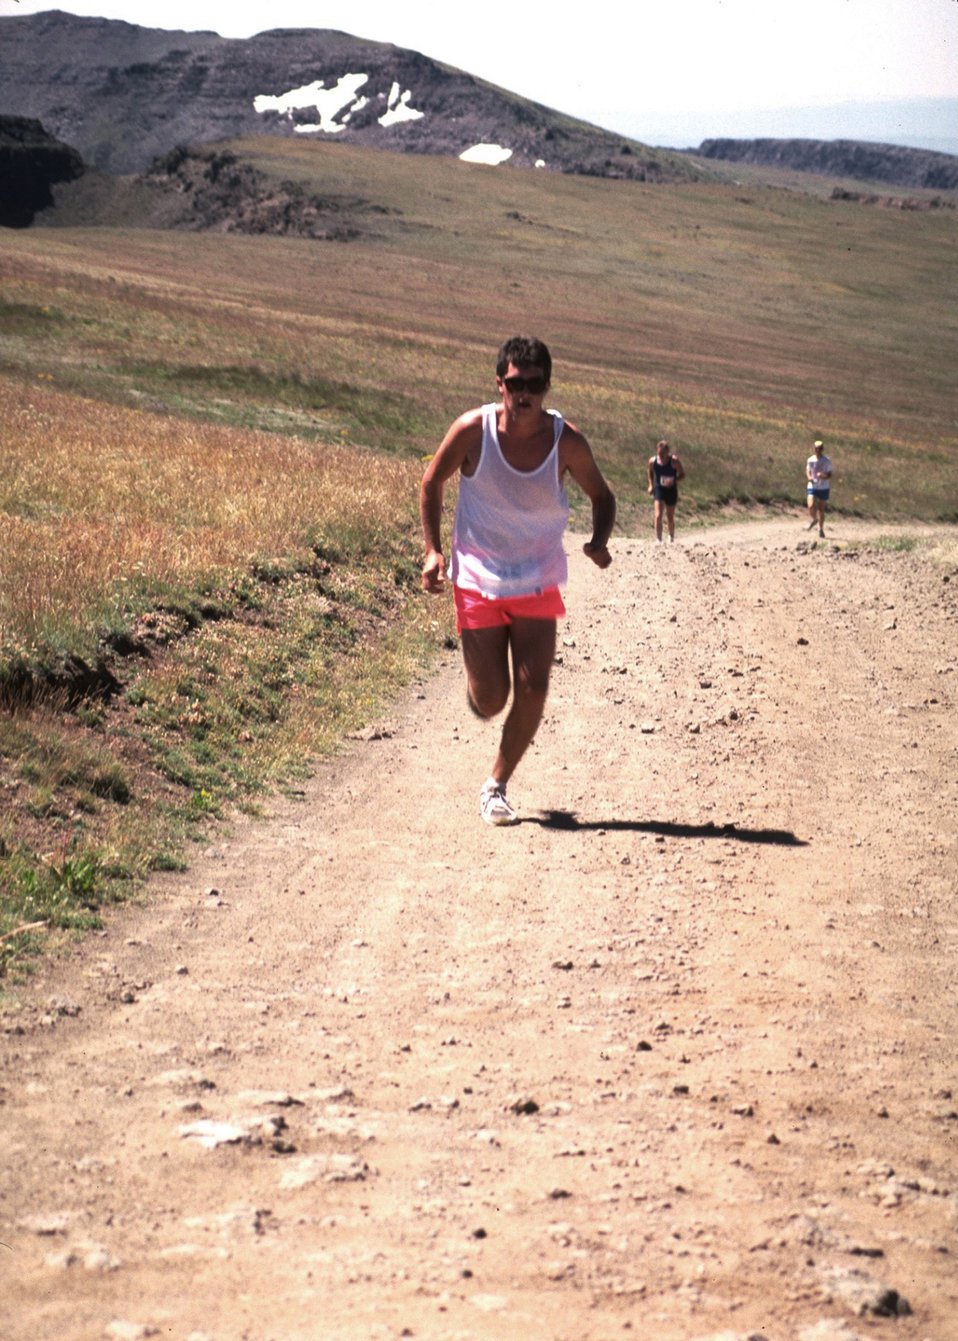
View of the Back Country Byway in Big Indian Gorge from Steens Mountain in Southeastern Oregon.